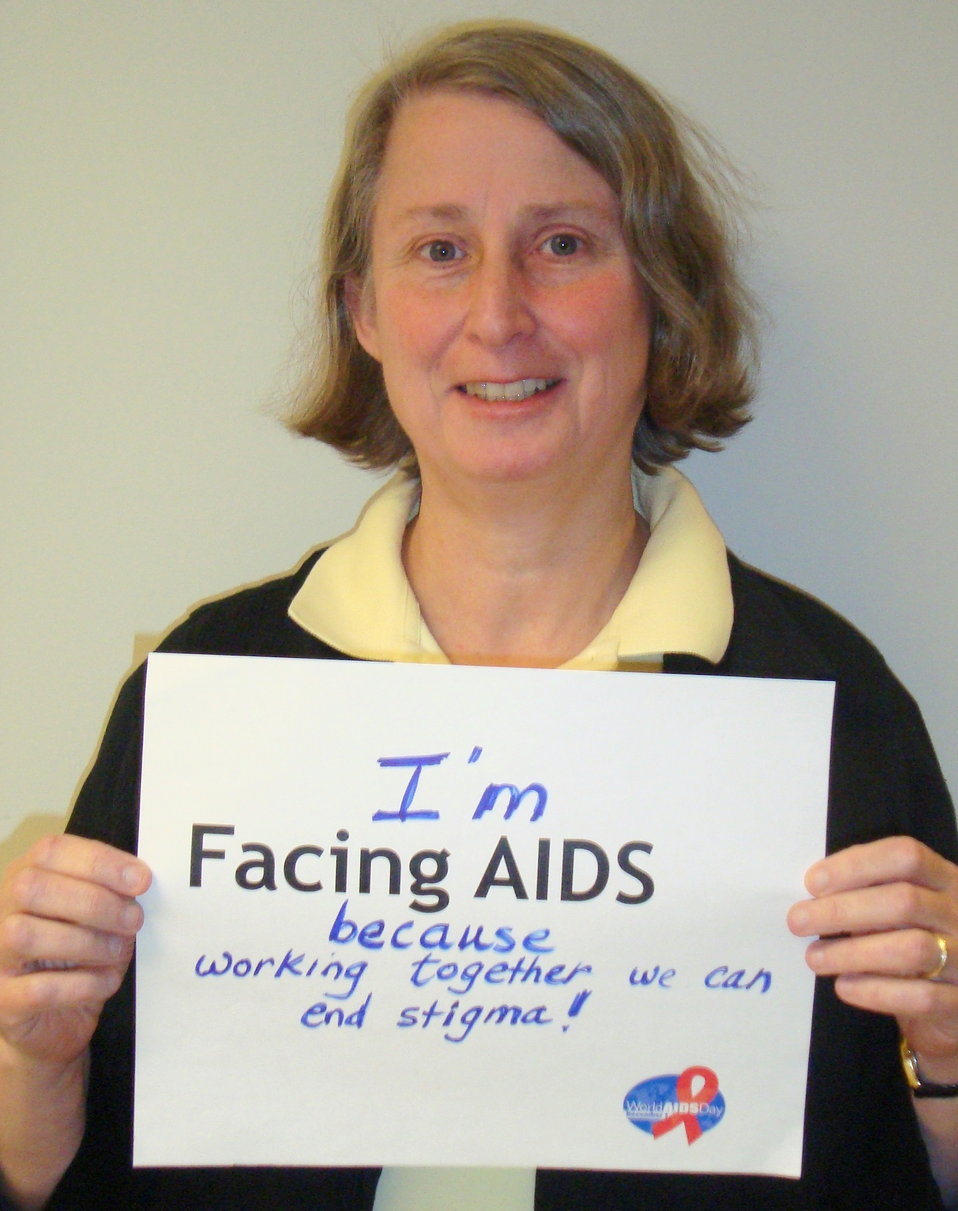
FacingAIDSCampaign 067

'I'm facing AIDS because working together we can end stigma!'